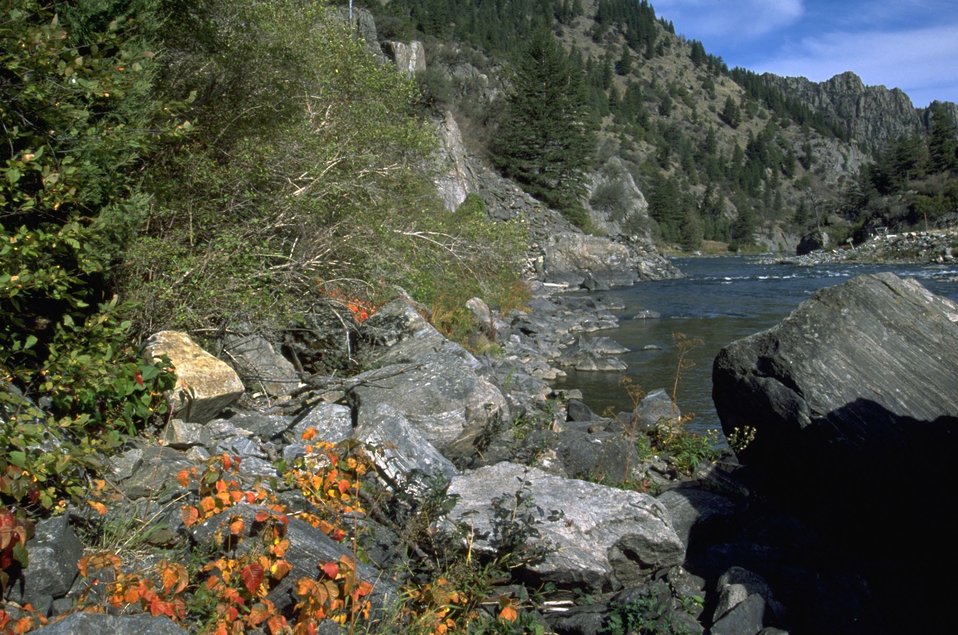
Poison Ivy next to Madison River